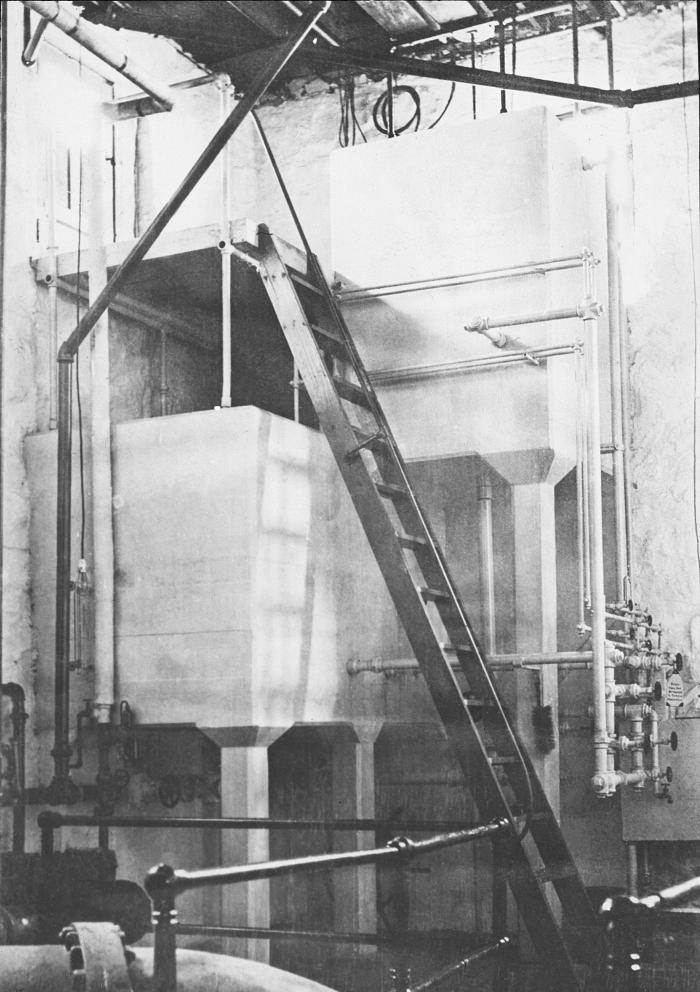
This historic 1913 photograph depicted the inside of the Duluth, Minnesota hypochlorite plant. This device was integral to the city's water filtration system.